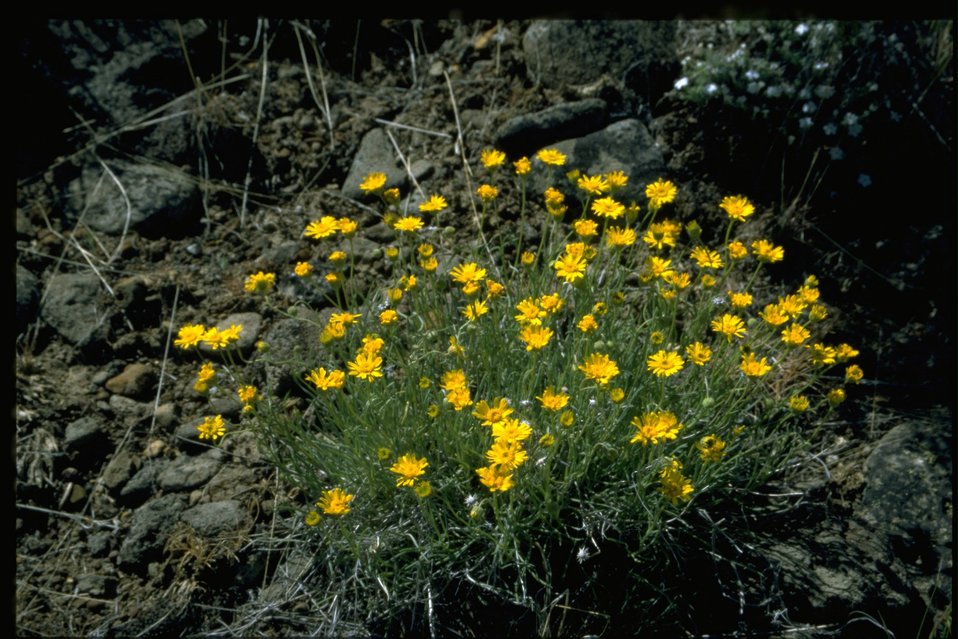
Medium shot of balsamroot wildflowers.